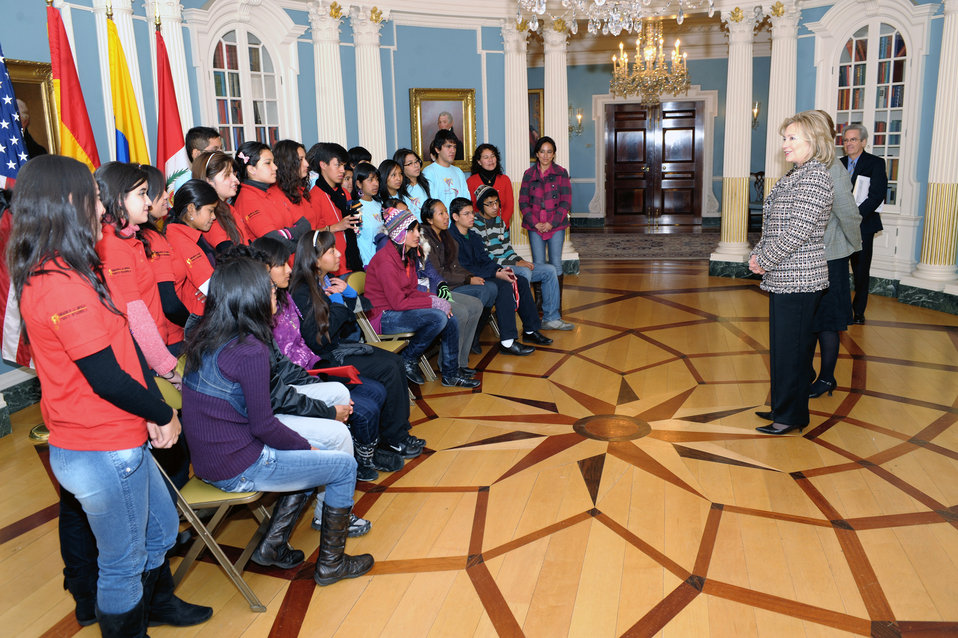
Secretary Clinton Meets With Bolivian, Ecuadorian, and Peruvian Youth Ambassadors

U.S. Secretary of State Hillary Rodahm Clinton meets with students and teachers from Bolivia, Ecuador, and Peru, who are participating in the Bureau of Educational and Cultural Affairs Youth Ambassadors program at the U.S. Department of State in Washington, D.C., on March 4, 2011.